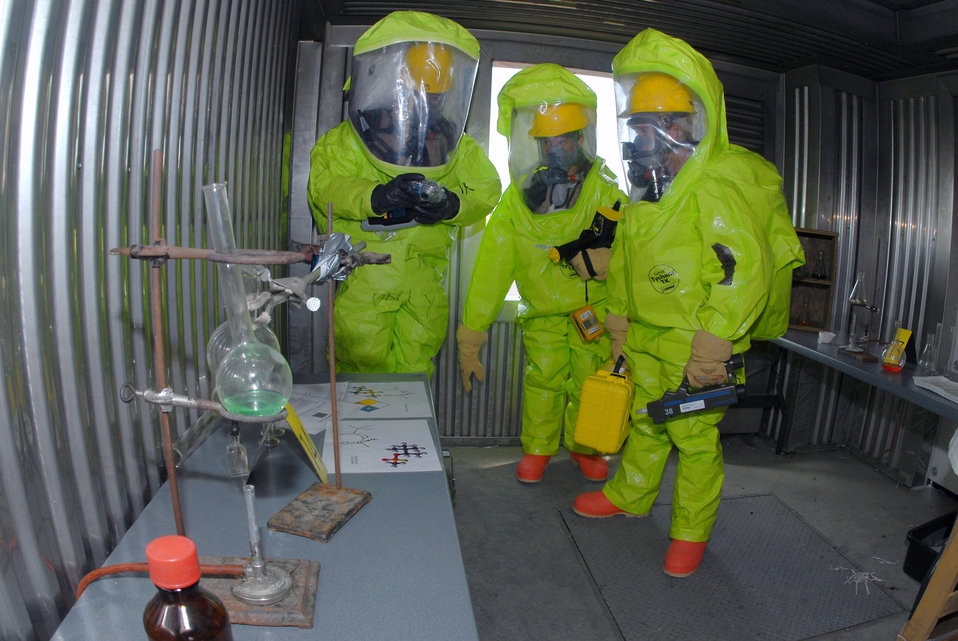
Don't touch this

From left to right, Tech. Sgt. Brian Lebrun, Senior Airman Chrystal Nelson and Senior Airman Theta Olson survey a simulated dangerous area during a hazardous materials exercise June 26 at the North Dakota Air National Guard's Regional Training Site in Fargo, N.D.